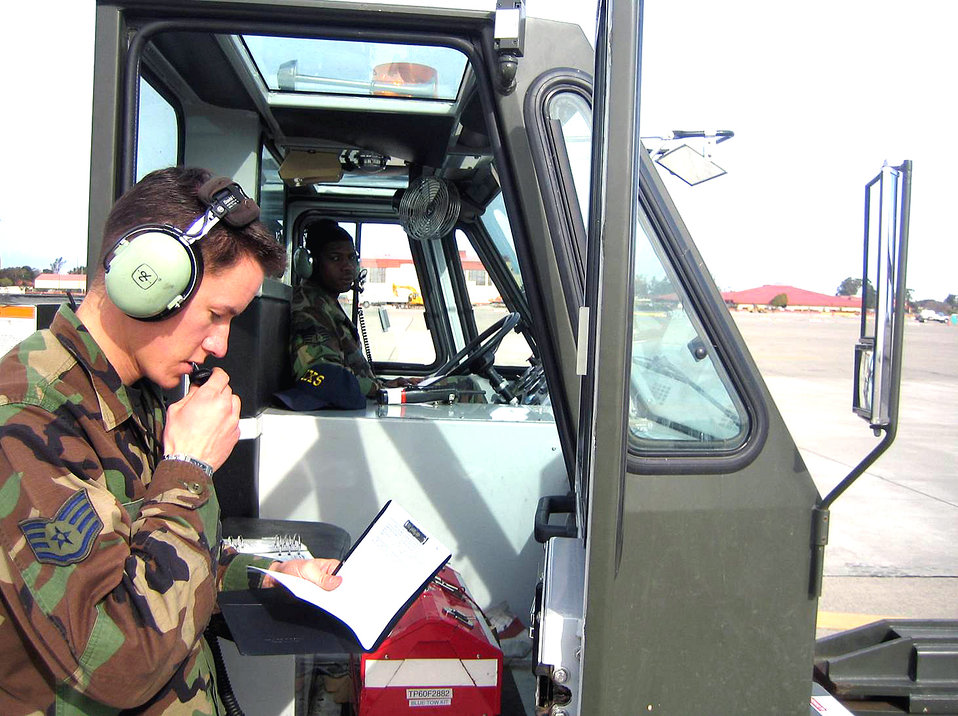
Travis, Robins test wireless aircraft intercom system

Aircraft maintenance Airmen use wireless headsets as part of communication capabilities tests for the Air Force maintenance career fields. The test was part of an initiative by the Air Mobiliy Warfare Center's Air Mobility Battlelab at Fort Dix, N.J. The Airmen are assigned to the 60th Aircraft Maintenance Squadron at Travis Air Force Base, Calif.